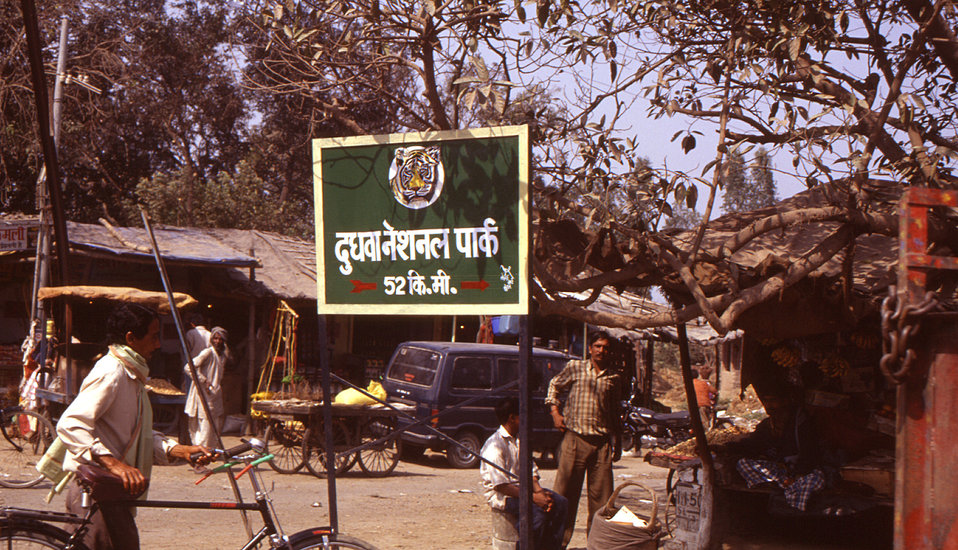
This 2000 image depicted a typical rural town street scene photographed by Chris Zahniser, B.S.N., R.N., M.P.H., a STOP immunization initiative team member and photographer who was assigned to the state of Uttar Pradesh in northern India, and spent three months working in the Districts of Gorakhpur and Deoria. The sign in the center described directional information through the town, and says 'Dudhwa National Park, 52 Kilometers'. The National Park is a Tiger Reserve, and is located in India's District of Lakhimpur-Keri, which is situated in close proximity to the border of Nepal.